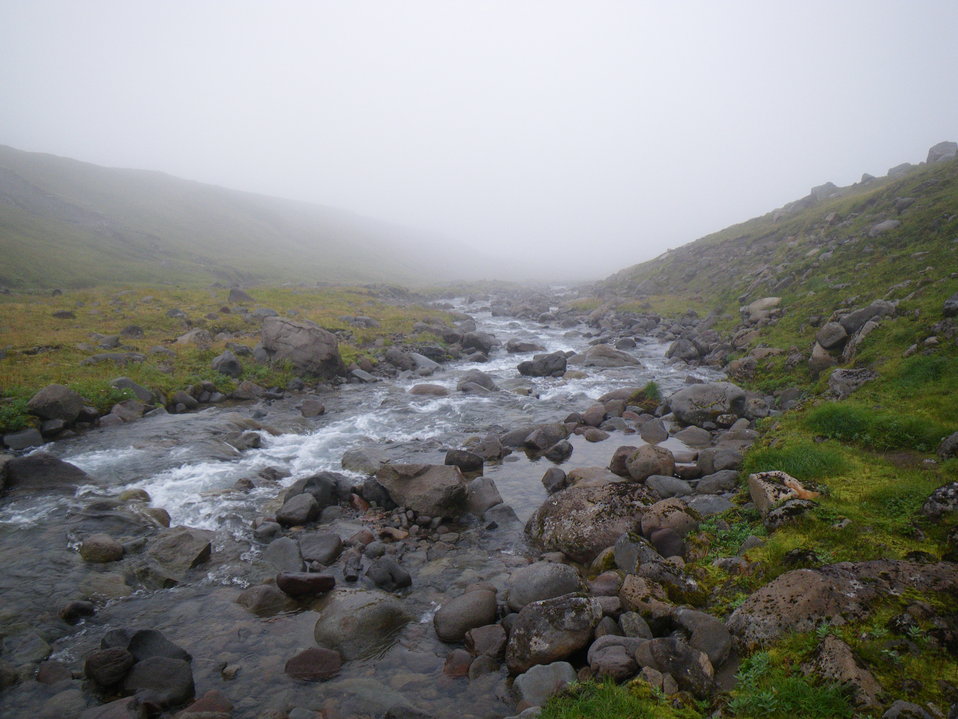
Izembek Wilderness

Wilderness near Frosty Peak, Izembek National Wildlife Refuge
Photo by Kristine Sowl,
USFWS, Public Domain